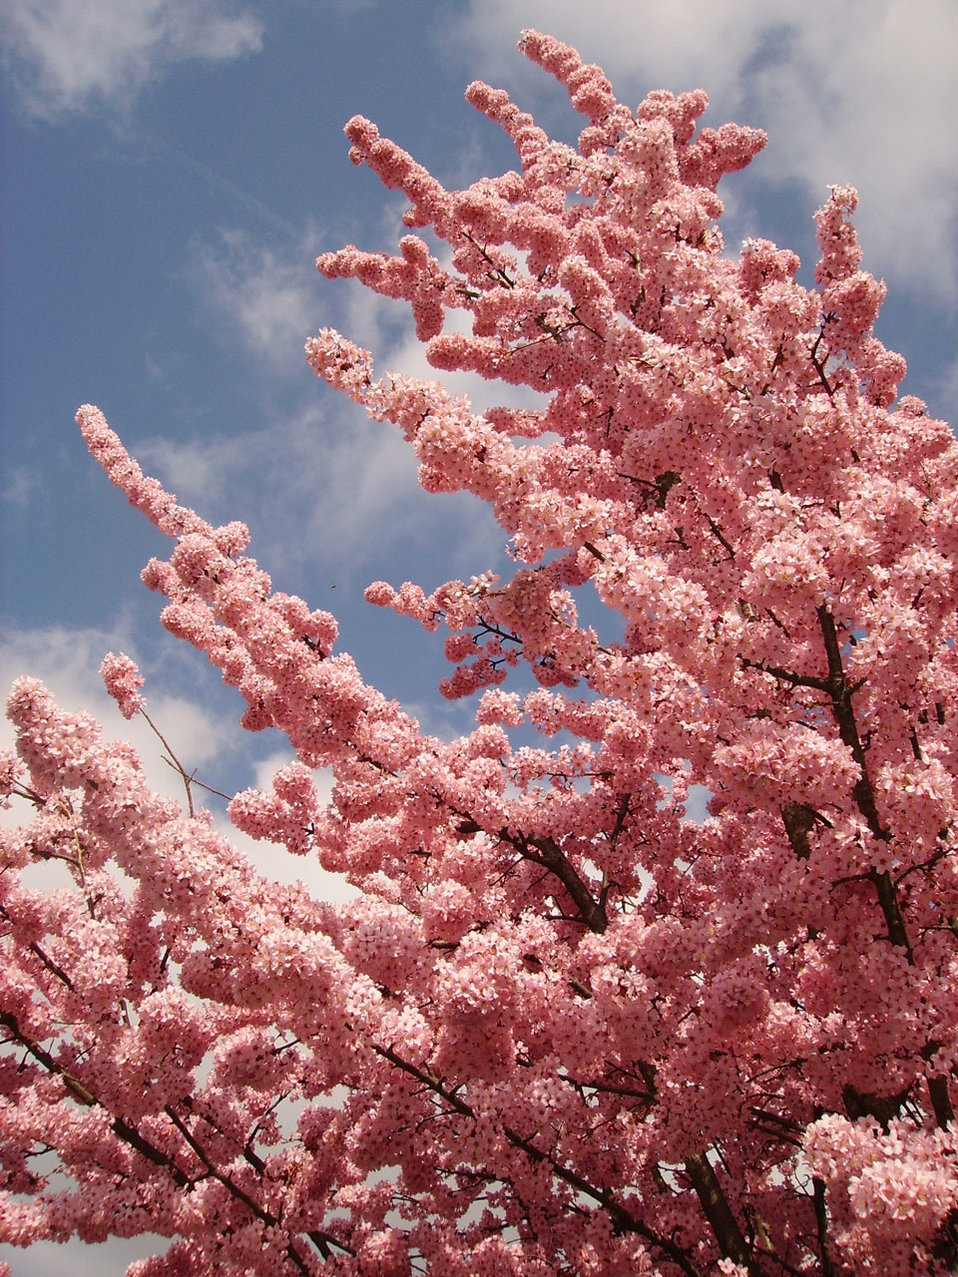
Cherry blossoms

Beautiful cherry blossoms against a sky background.